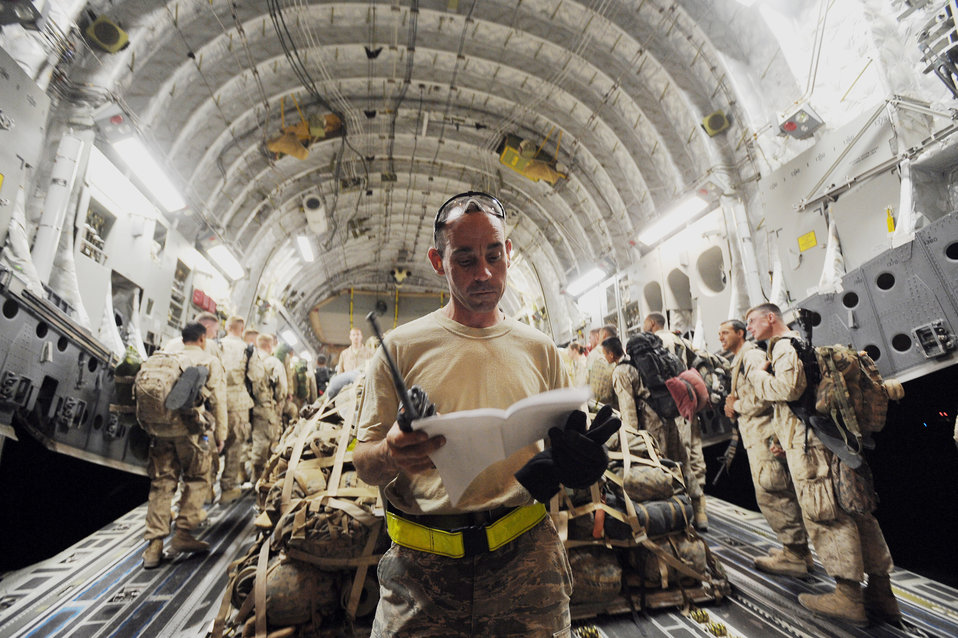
Airmen moving the mission in Afghanistan

Staff Sgt. John Fitzgerald checks paperwork as 157 Marines board a C-17 Globemaster III aircraft to fly to Camp Pendleton Calif., April 15, 2010, at Camp Bastion, Afghanistan. Sergeant Fitzgerald is a passenger-services agent assigned to the 451st Expeditionary Logistics Readiness Squadron Det. 1.